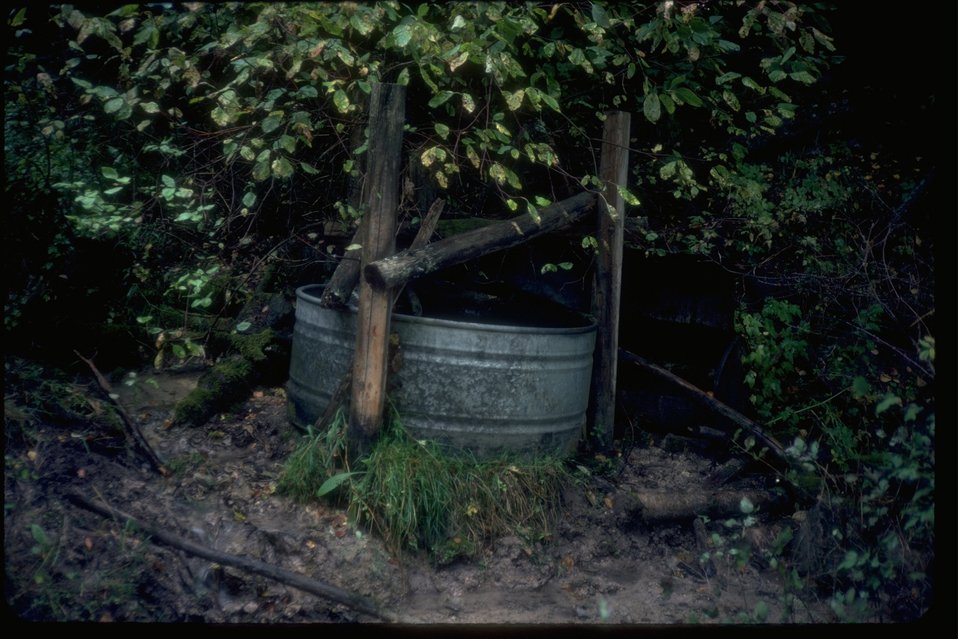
A developed spring in Ferry County, Washington.